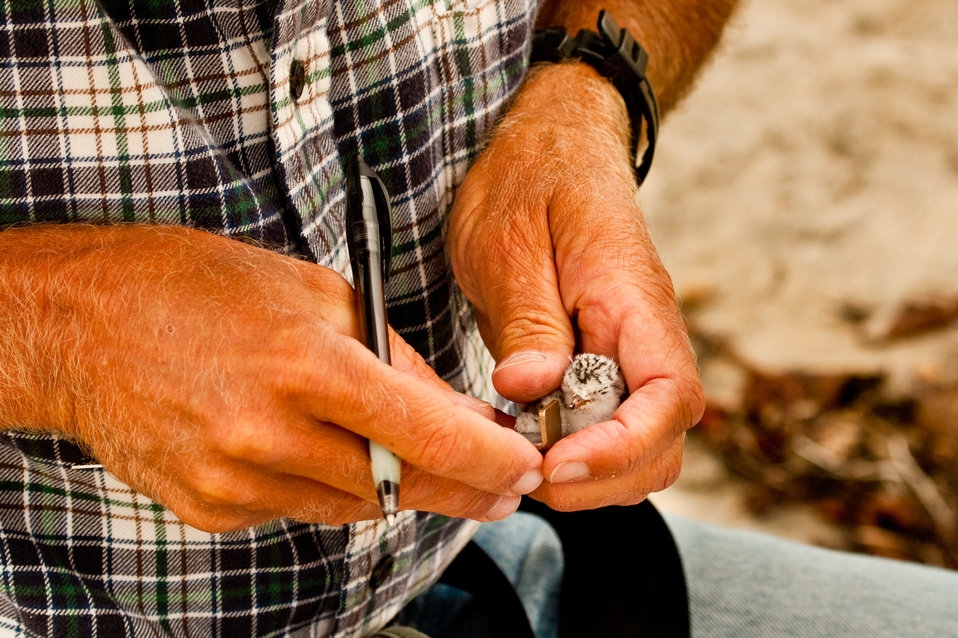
California least tern (CLT) gets its wing measurements

Biologists regularly monitor CLT and Western snowy plover chicks throughout the breeding season from March to August.